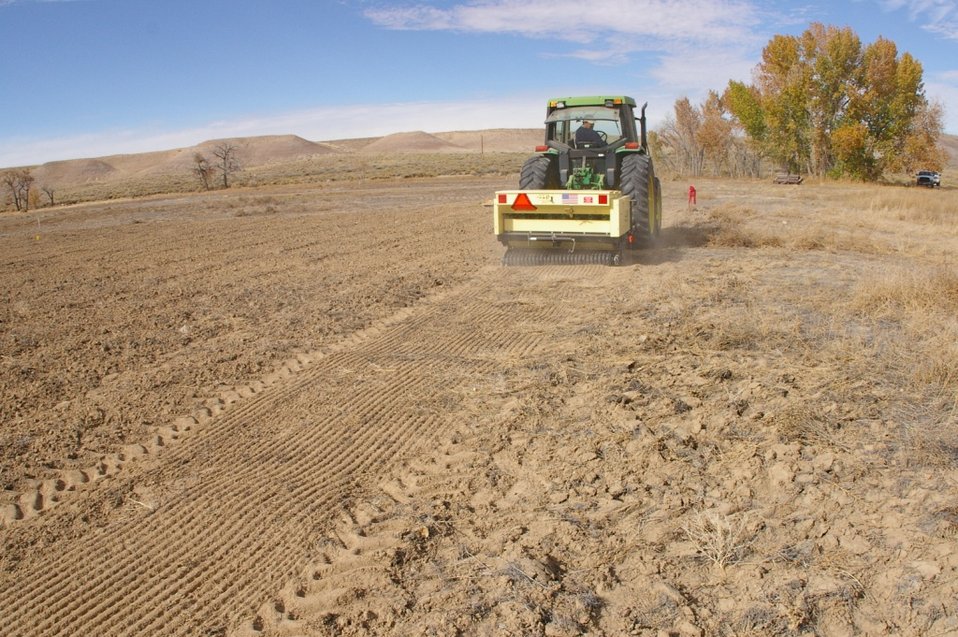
Truax Broadcast Seeder

Different from drilling seed this machine spreads the seed across the ground then pushes it into the dirt. This is part of a grassland research project at Ouray National Wildlife Refuge.